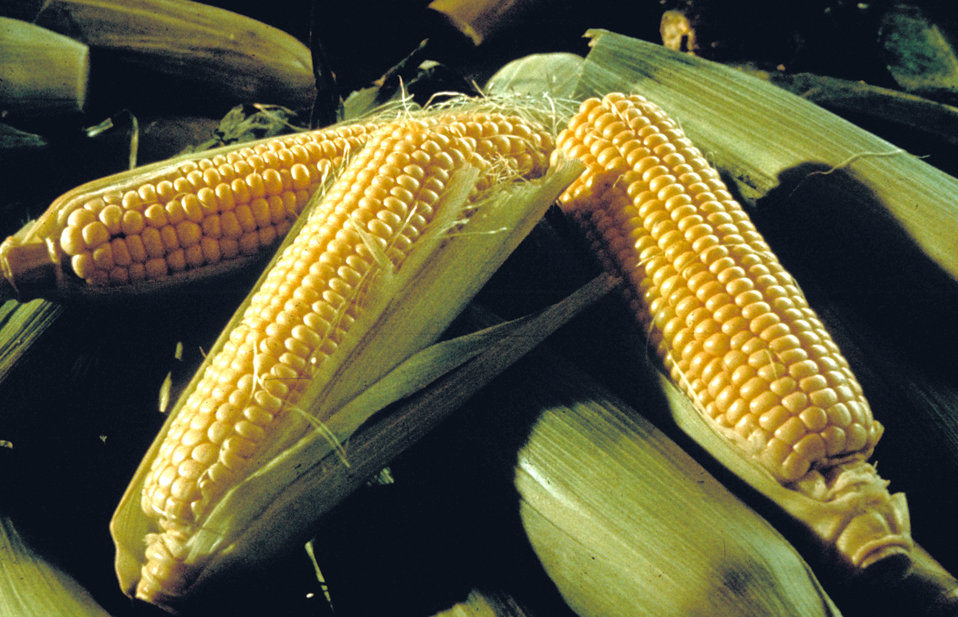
A photo of harvested sweet corn taken in 1995.